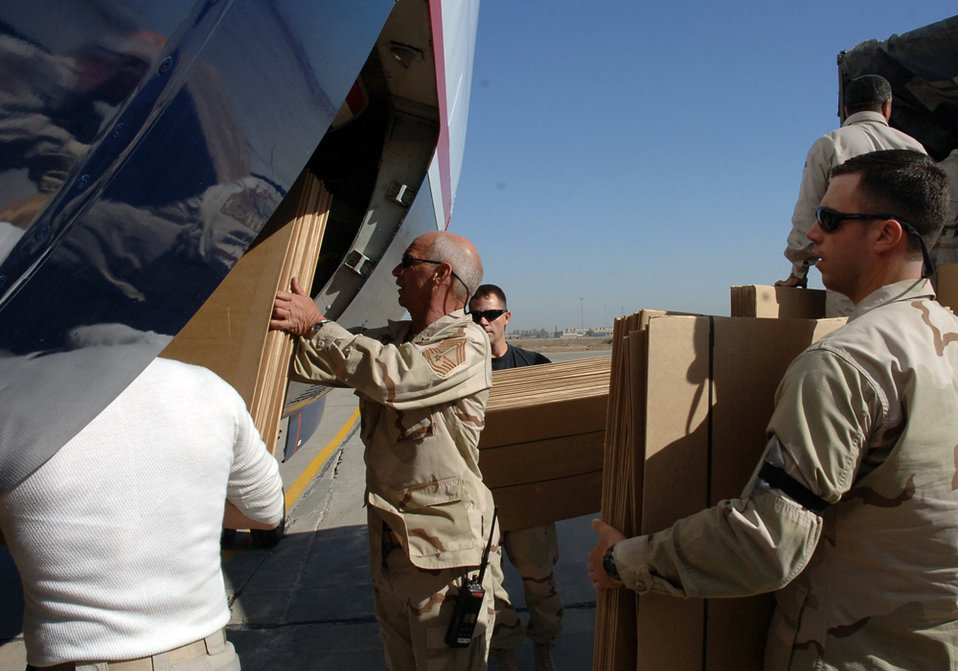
Iraqi poll workers

BAGHDAD, Iraq (AFPN) -- Airmen load election materials aboard a contract flight that will be going to polling site. The Airmen are with the 447th Expeditionary Logistics Readiness Squadron.